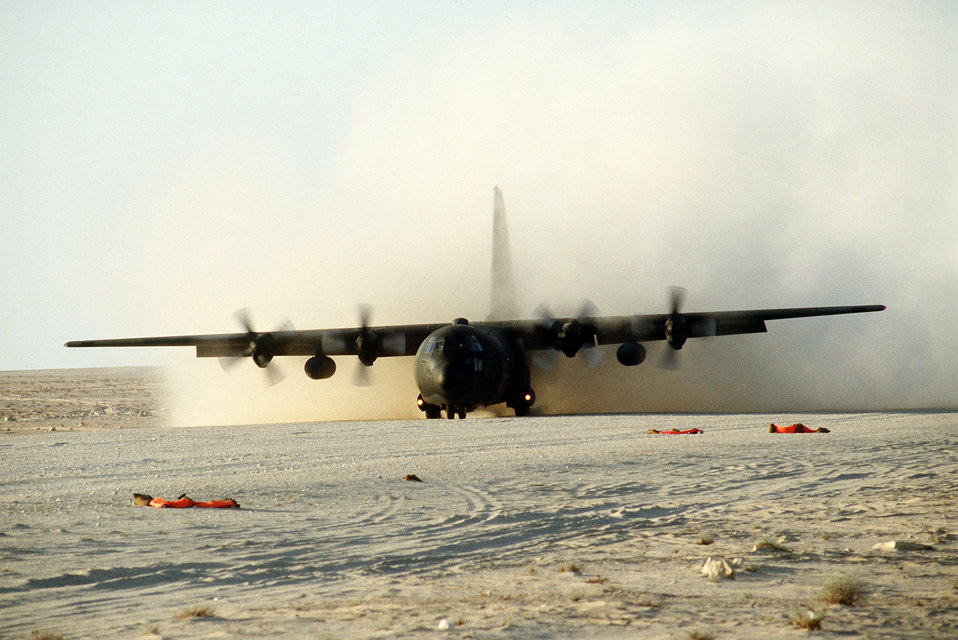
C-130E Hercules does an assault landing

1990's -- A C-130E Hercules transport aircraft from the 314th Tactical Airlift Wing, Little Rock Air Force Base, Ark., does an assault landing on a desert runway during Operation Desert Shield.